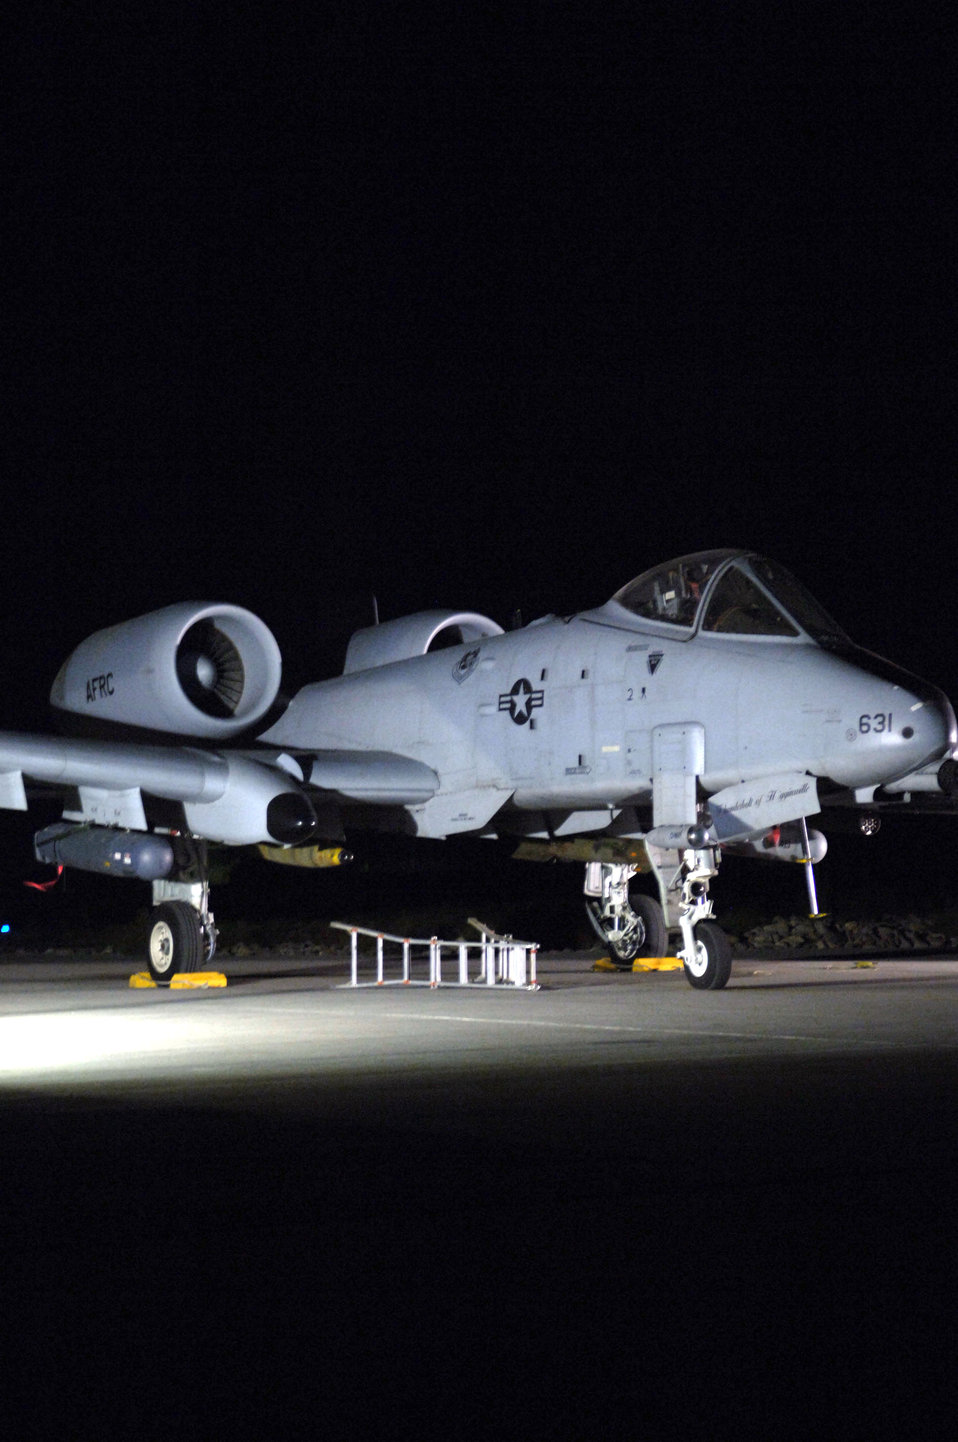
A-10, ready for action

An A-10 Thunderbolt II sits on a ramp waiting for its next mission at Bagram Air Base, Afghanistan, on July 6. The A-10 is used for close-air support.